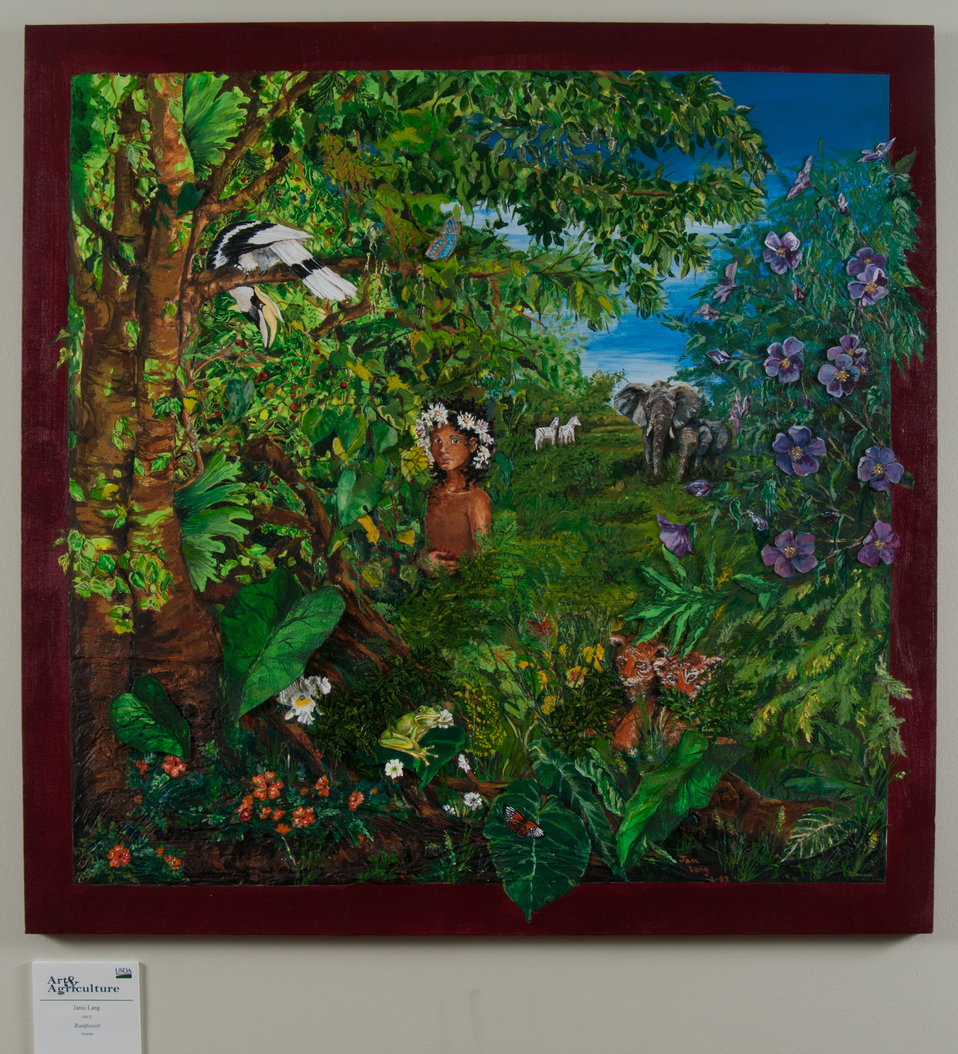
Online Viewer's Choice entries of the 2013 Art & Agriculture, Tuesday, July 9, 2013, in the South Building, Washington, D.C. Themes were expressed by employees from across the department and the contest was open to full-time and part-time USDA employees. Winning artwork will be displayed till the end of the year. U.S. Artistic expression is a creative outlet that is vital for an individual to grow and develop.